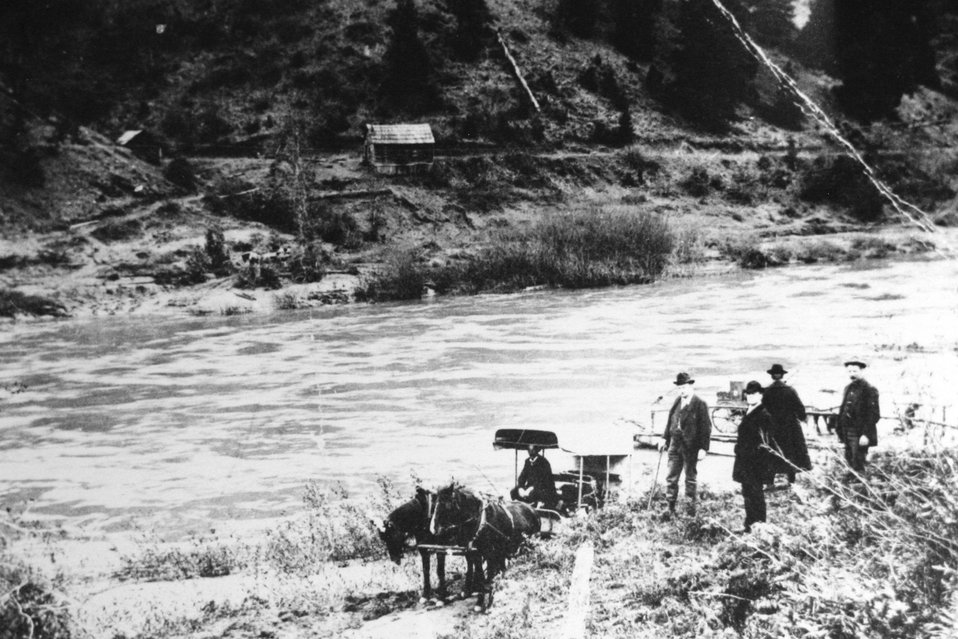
Massie Ferry